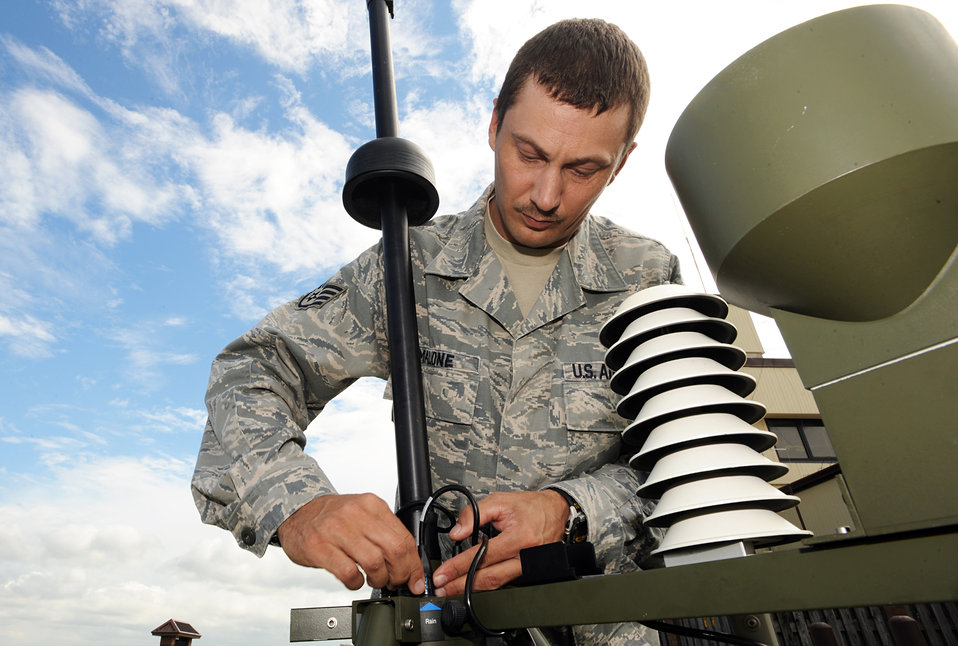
Eyes of the storm

Staff Sgt. Charles Malone readies a surveying instrument as part of the Tactical Meteorological Observing System station, July 6, 2010, at Whiteman Air Force Base, Mo. The TMOS systems can be set up and sending data within 15 minutes. Sergeant Malone is a 509th Operation Support Squadron weather forecaster.